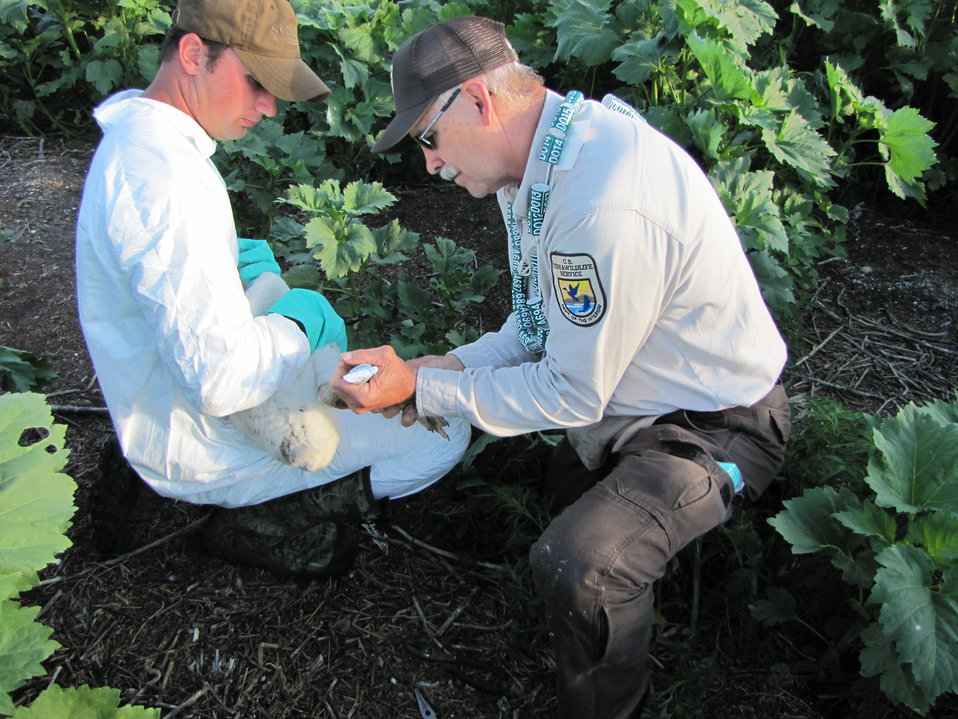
2010 Pelican Banding at Chase Lake NWR

Project Leader for the Arrowwood National Wildlife Refuge Complex, Kim Hanson, provides his expertise while banding pelicans at Chase Lake National Wildlife Refuge in North Dakota.